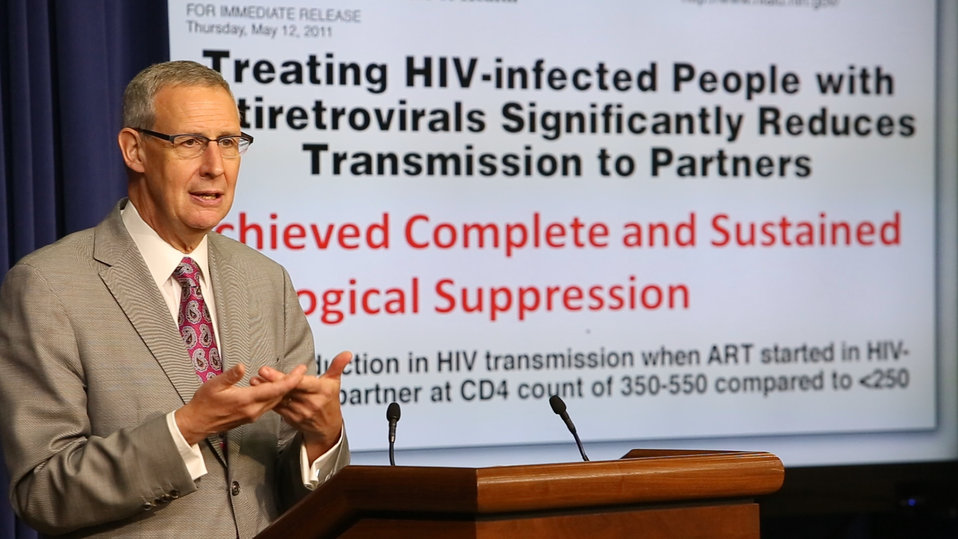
MVI 0180.MOV.Still003